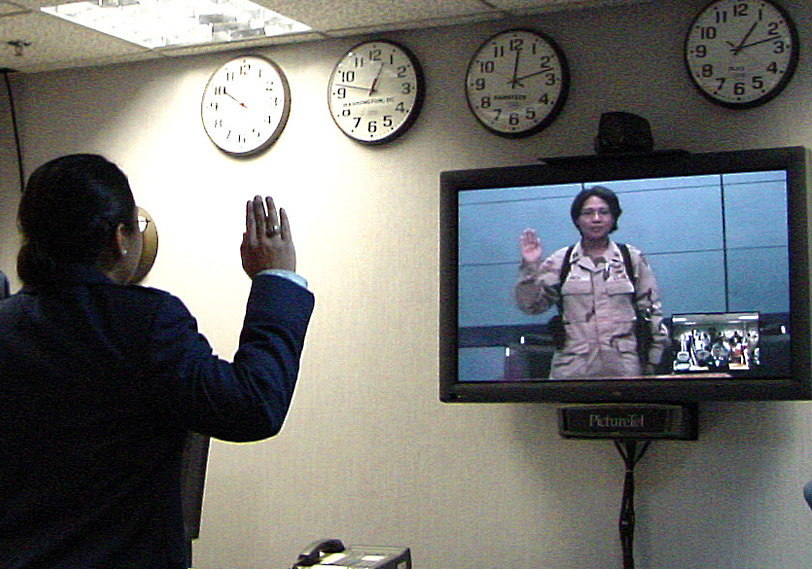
Technology connects sisters

ROYAL AIR FORCE MILDENHALL, England -- First Lt. Joy Param, an intelligence officer with the 3rd Air Force (left), is promoted to captain by her sister, Army Capt. Jennifer Finch. Captain Finch administered the oath of office to her sister via video teleconference from Iraq. Captain Finch is the 502nd Military Intelligence commander.